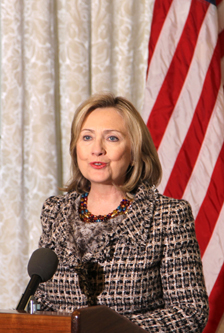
Secretary Clinton Addresses Reporters

U.S Secretary of State Hillary Rodham Clinton addresses reporters during a press conference held at the U.S. Embassy in Paris, France, on March 19, 2011, following a crisis summit on Libya with world leaders at the Elysee Palace.